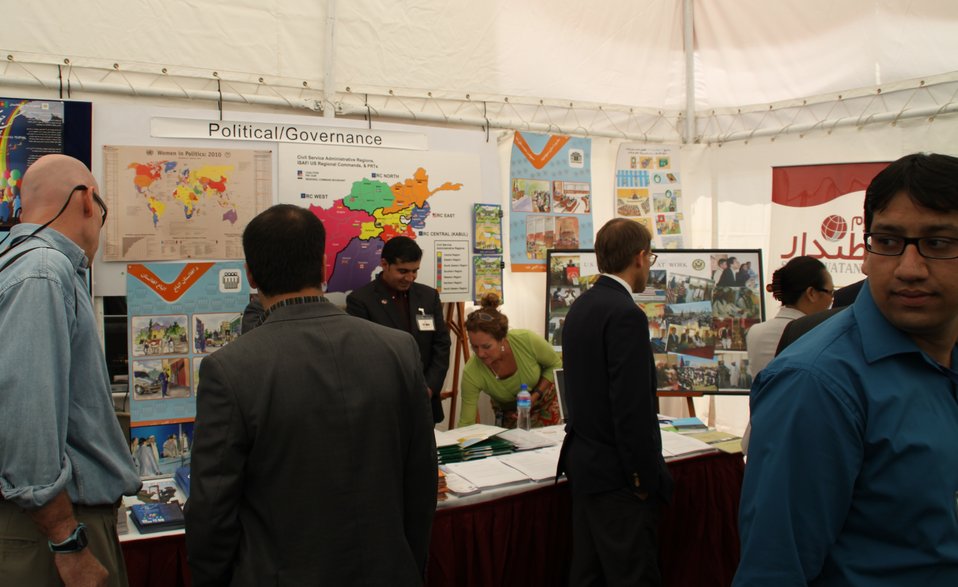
Kabul Official July 4th Celebration